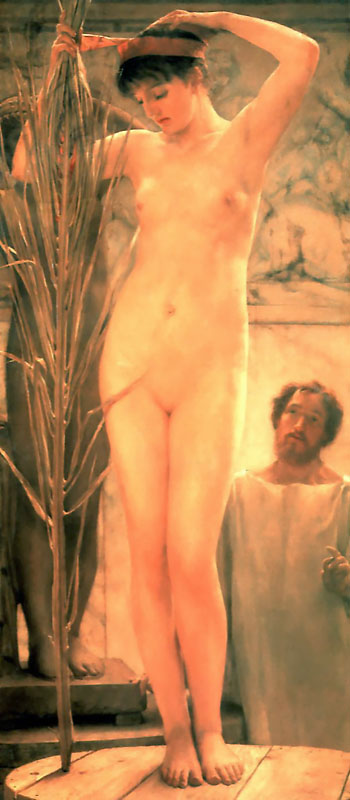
A Sculptors Model